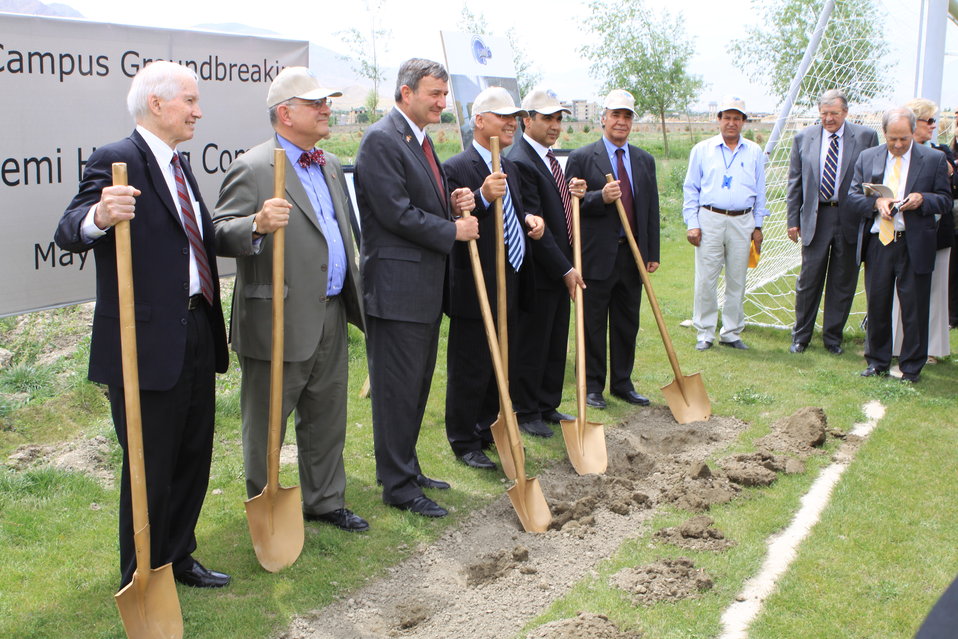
100526 AUAF Graduation 421